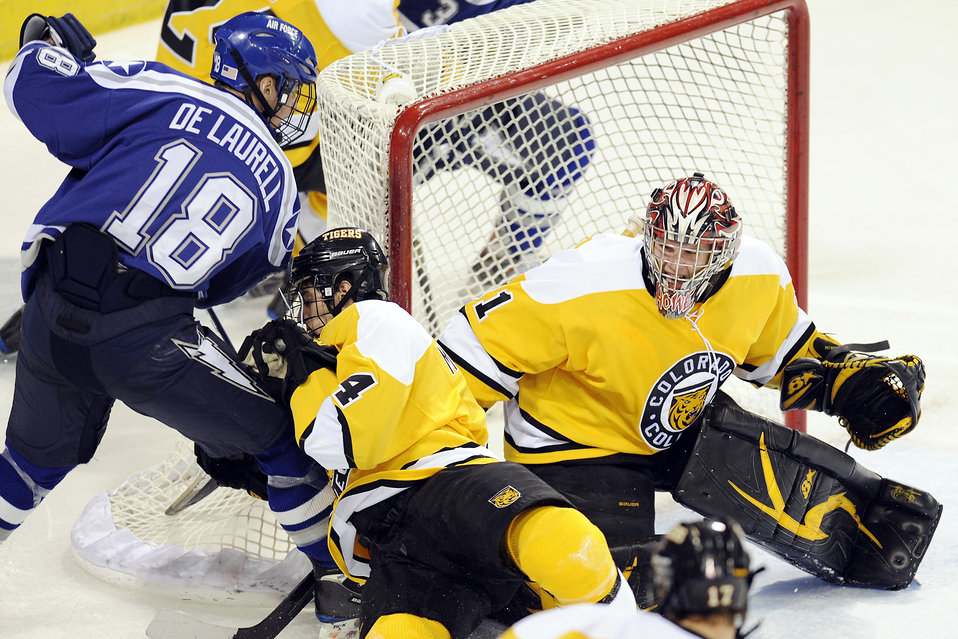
Falcons lose in match with Colorado Tigers

Colorado College's Joe Marciano assists goalkeeper Joe Howe in stopping a shot by Falcon freshman forward Kyle De Laurell as 10th-ranked Colorado College beat Air Force 2-0 in a non-conference hockey game Feb. 5, 2010, at the World Arena in Colorado Springs, Colo.